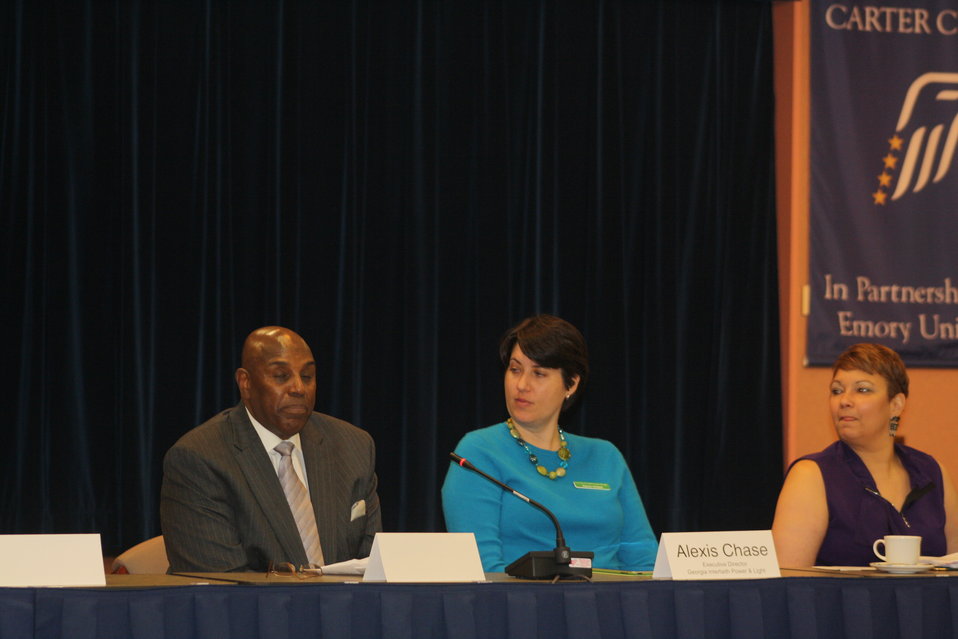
Faith-Based and Neighborhood Partnership launch at Atlanta's Carter Center